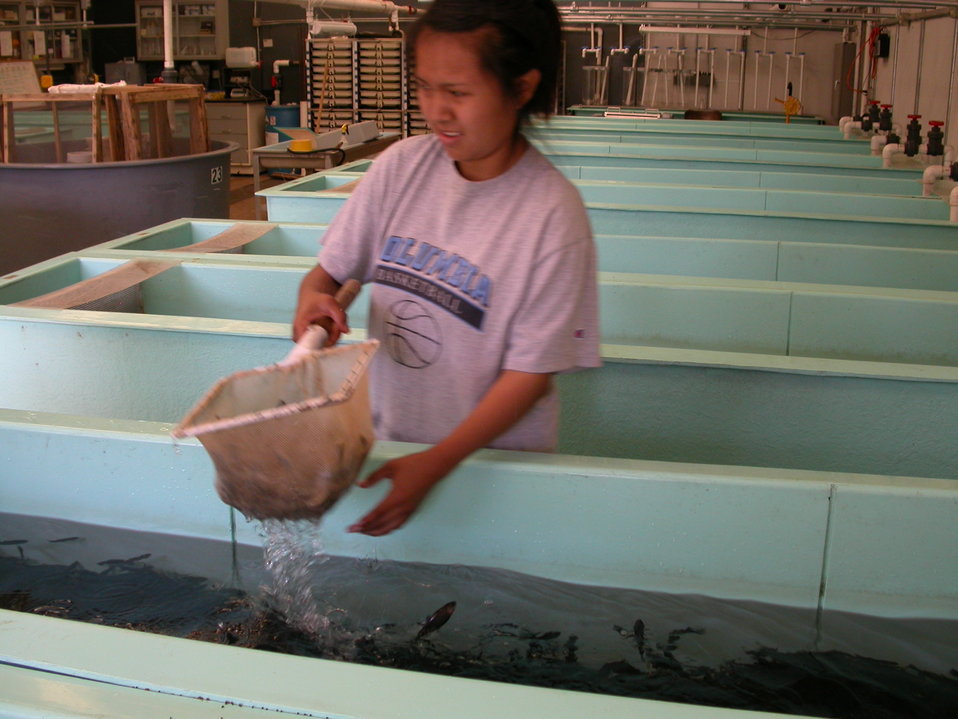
Working in a Fishery